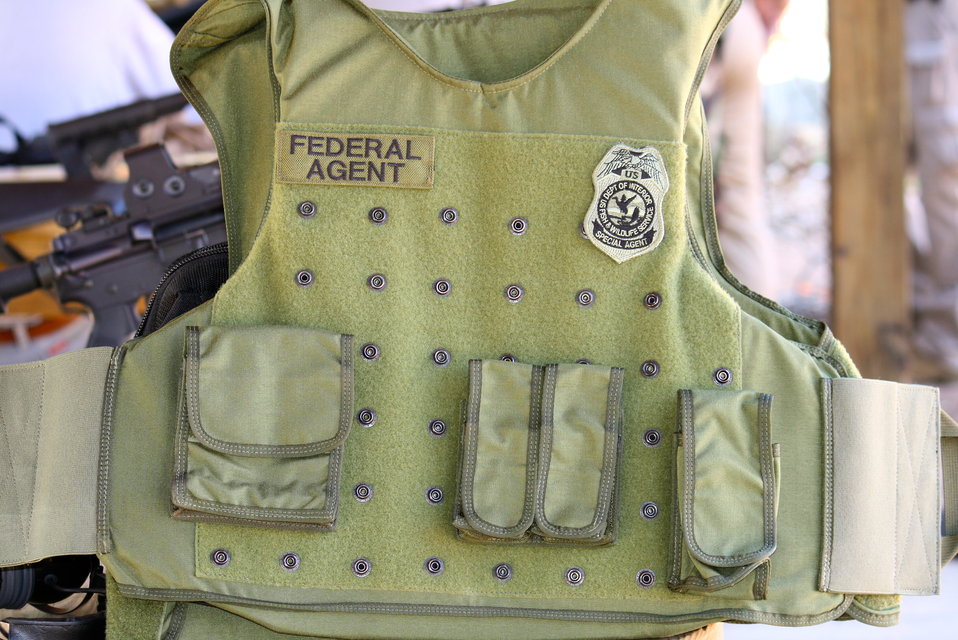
Kevlar Vest

Law Enforcement target practice at outdoor shooting range in Glastonbury, CT.